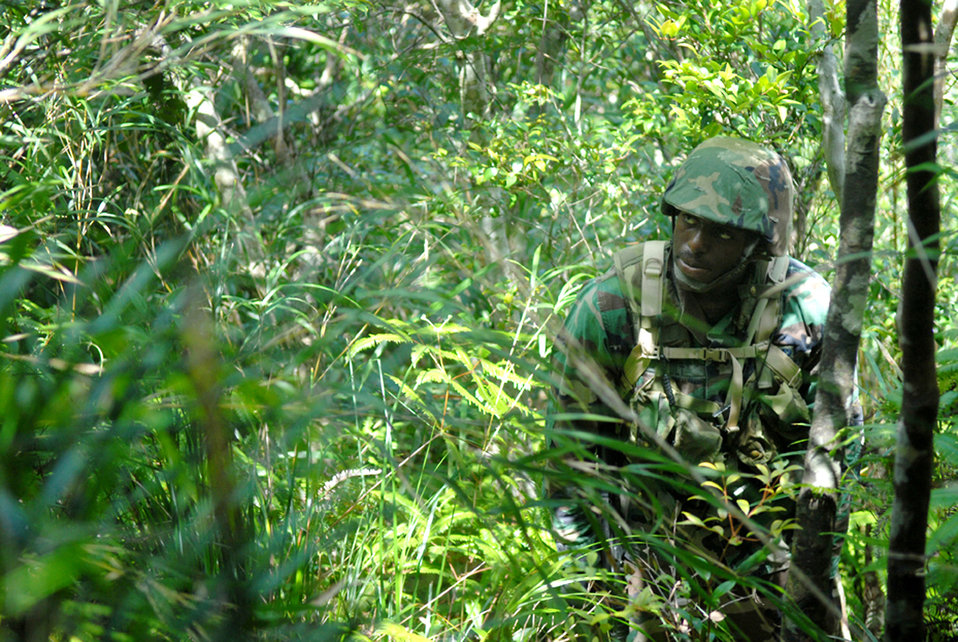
Jungle warfare training

Airman 1st Class Scott Vault finds out firsthand how thick jungles are during his first navigation mission at the Jungle Warfare Training Center at Camp Gonsalves, Okinawa, on July 25. Thirty Airmen from the 18th Communications Squadron at Kadena Air Base, Japan, attended the weeklong course.